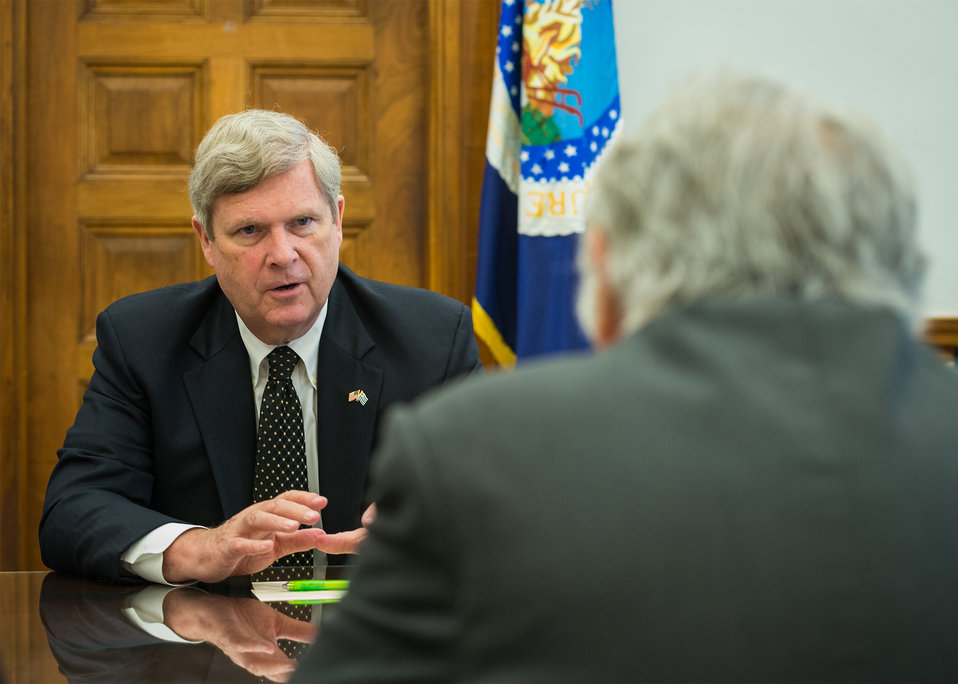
Agriculture Secretary Tom Vilsack and Uruguay President Jose Mujica discuss cooperation in agricultural research, production and climate changes on agriculture at the U.S. Department of Agriculture (USDA) in Washington, D.C. on Wednesday, May 14, 2014 to USDA Photo by Bob Nichols.